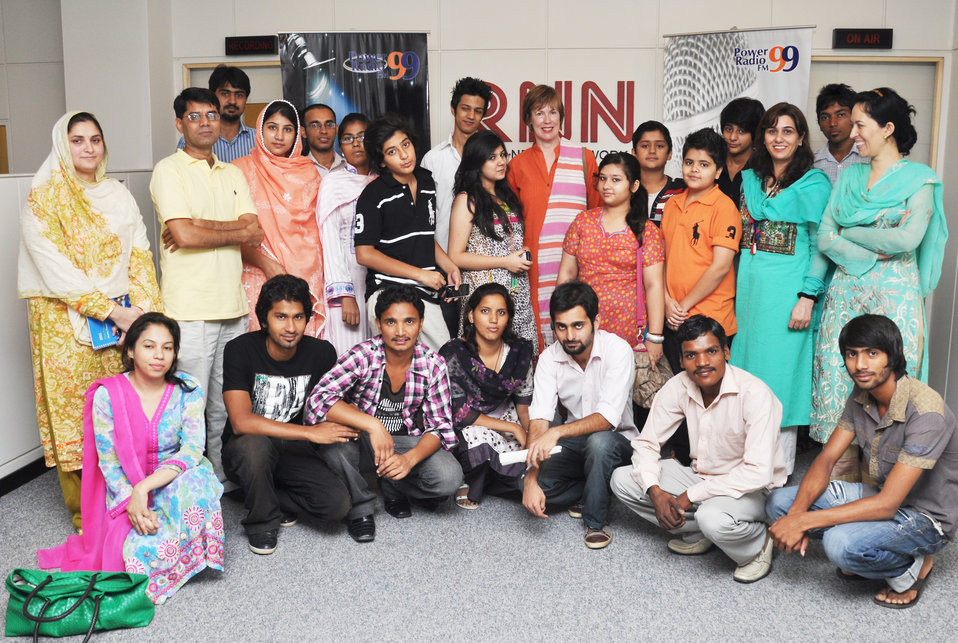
International Youth Day 2011

Islamabad, August 12, 2011 – Group photo of youth with Dr. Marilyn Wyatt, wife of U.S. Ambassador Cameron Munter. Dr. Wyatt joined youth for an interactive discussion on their issues on the international youth day at Power Radio FM 99.